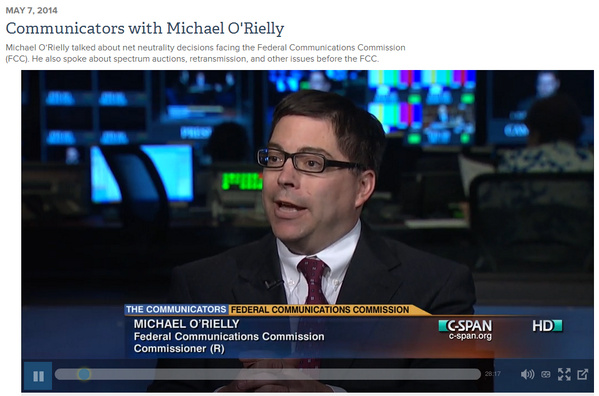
5.7.2014 C-SPAN

Commissioner O'Rielly speaking on C-SPAN, May 7, 2014.